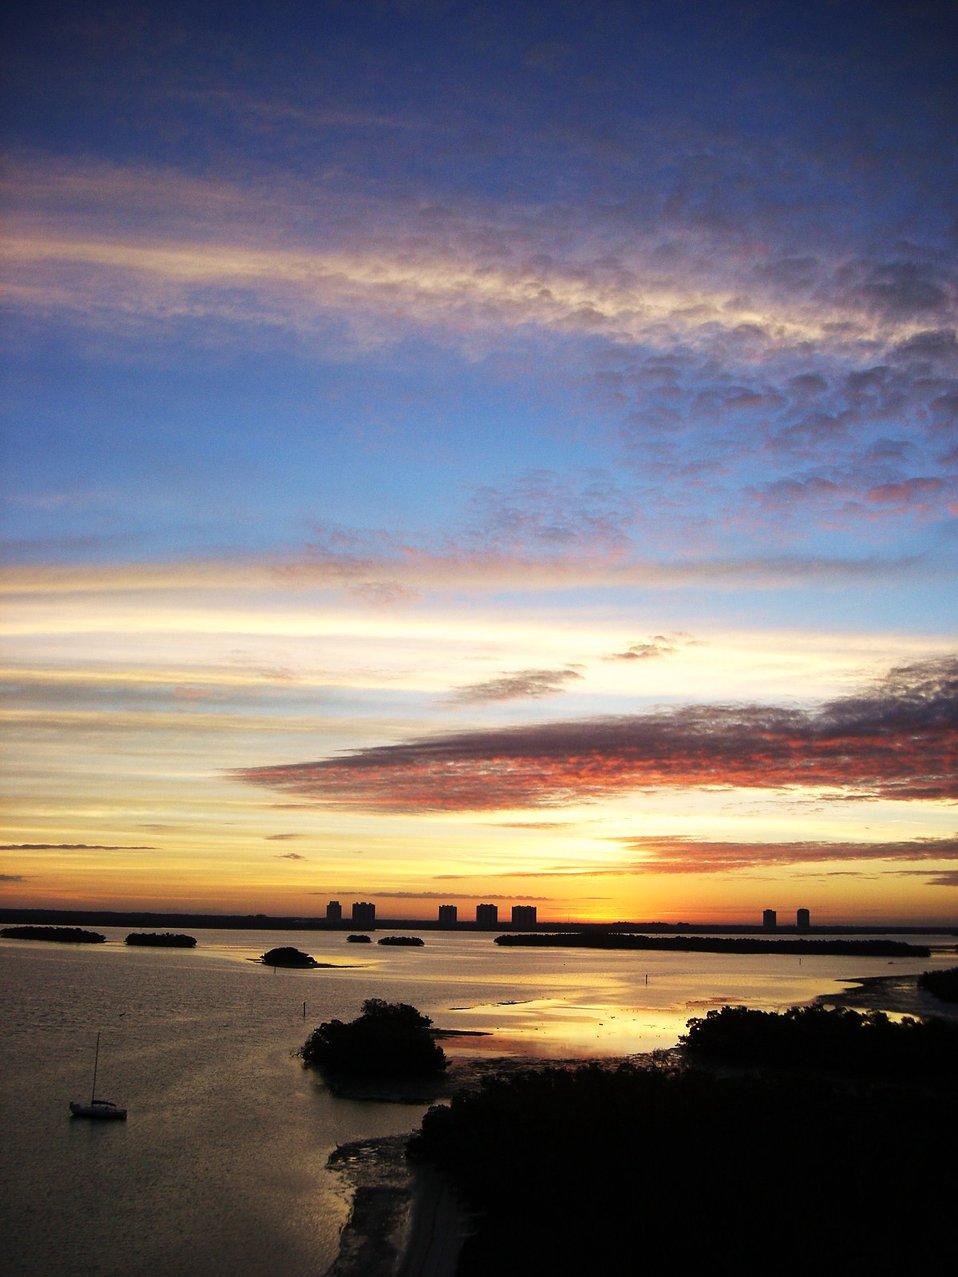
Uploaded by request of Kimmy Curhan.

I was standing on a balcony over the ocean enjoying the beautiful sunrise as I took this photograph.